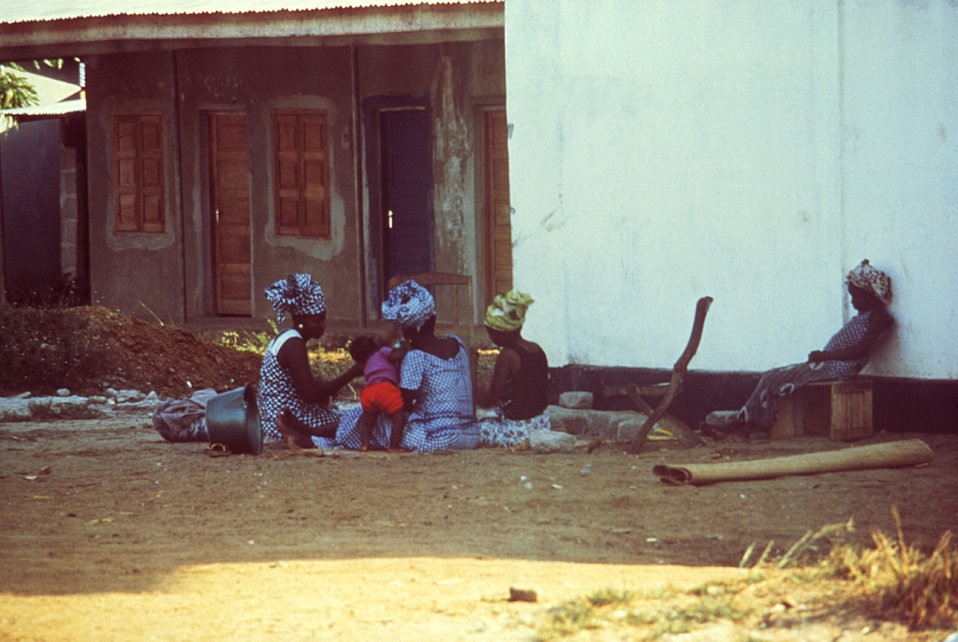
This 1977 group of Kenema, Sierra Leone women were here gathered while preparing a meal.